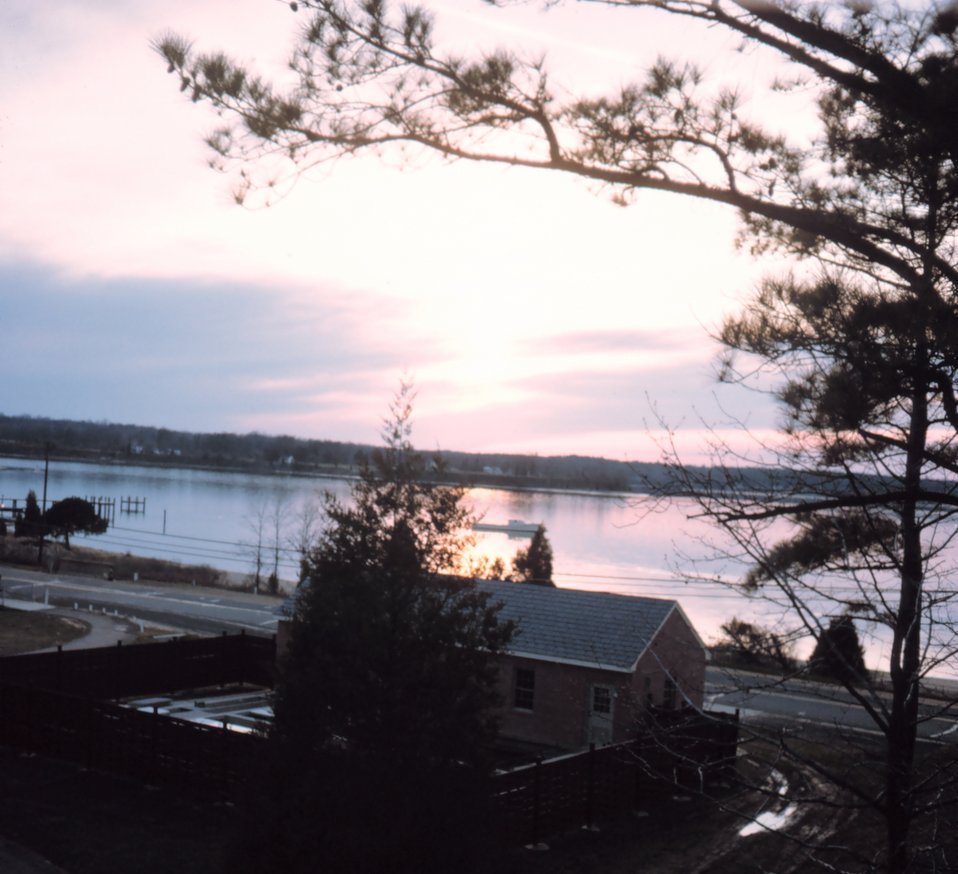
Overlooking the St. Mary's River from the campus of St. Mary's College of Maryland.